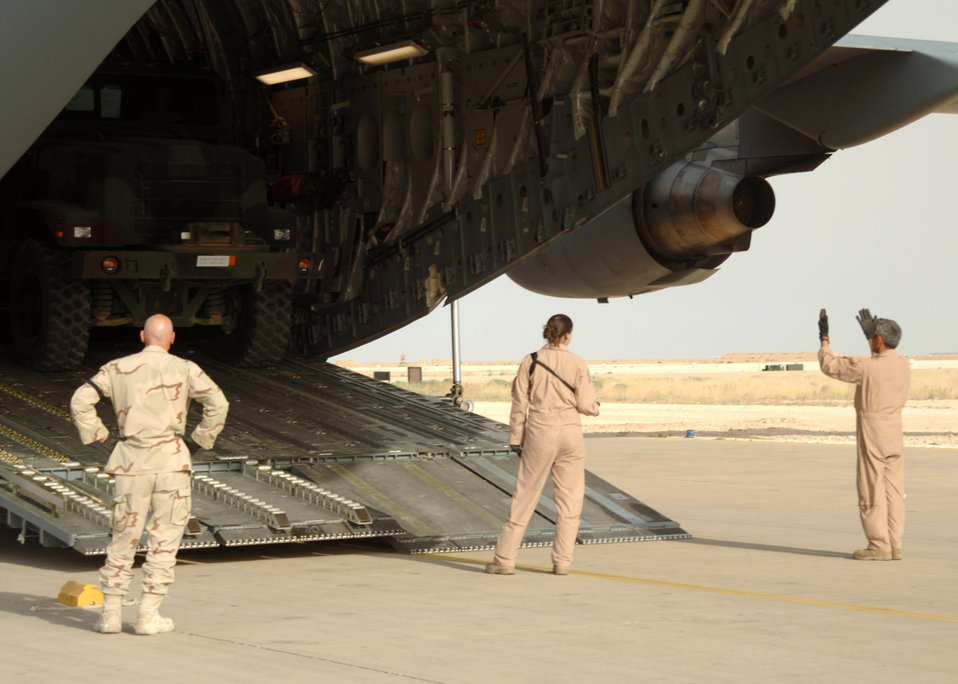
Aerial porters saving countless lives moving air cargo in Iraq

Airmen assigned to the 438th Aerial Port Flight and an aircrew from Charleston Air Force Base, S.C., coordinate the offload of a C-17 Globemaster III April 21 at Al Asad Air Base, Iraq. Since January, 438th APF Airmen have processed more than 32,000 passengers, 15,528 tons of cargo and more than 2,600 aircraft, keeping nearly 12,000 American servicemembers off the roads in convoys.